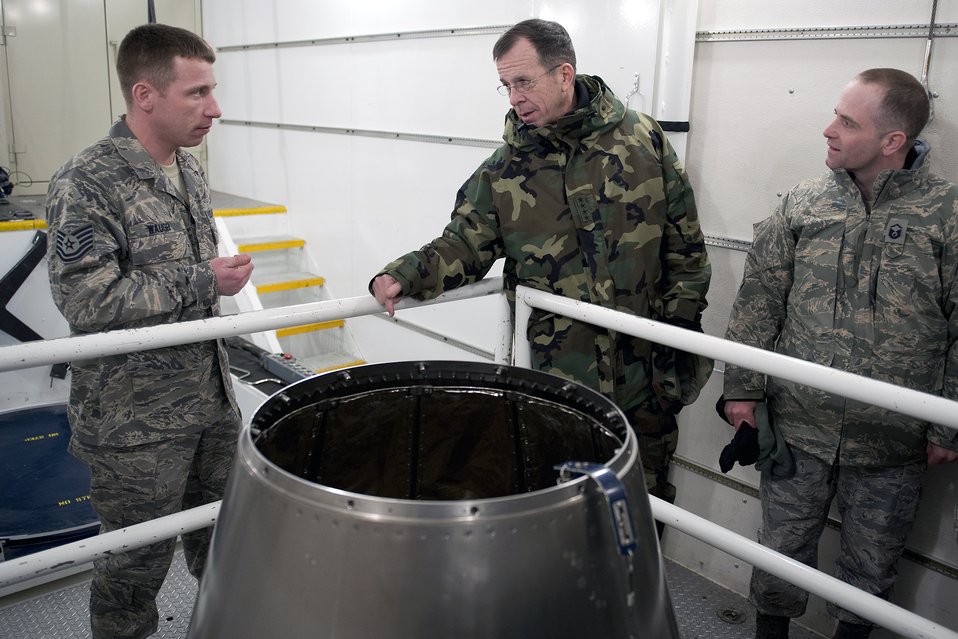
JCS chairman visits Minot

Adm. Michael G. Mullen, chairman of the Joint Chiefs of Staff, is briefed on the ICBM extraction trainer Feb. 18 during his visit to Minot Air Force Base, N.D.